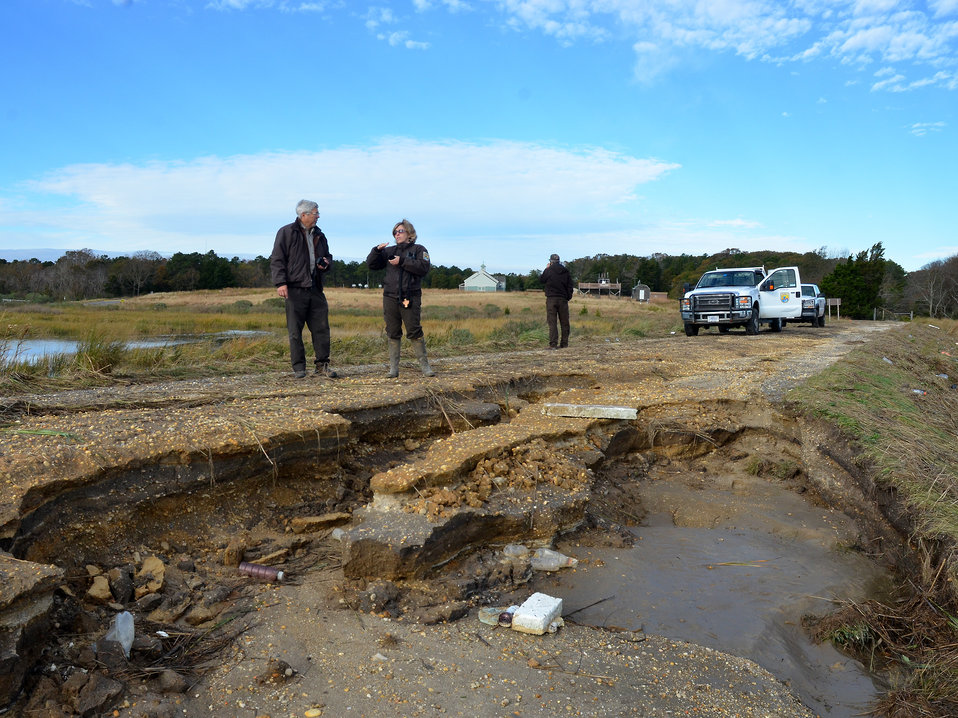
Assessing the damage (NJ)

Employees evaluate storm impacts after Hurricane Sandy dumped over five inches of rain on Edwin B. Forsythe National Wildlife Refuge. Employees continue to assess repair needs and storm impacts on the refuge, like the severe erosion on the west end of the refuge's south dike.